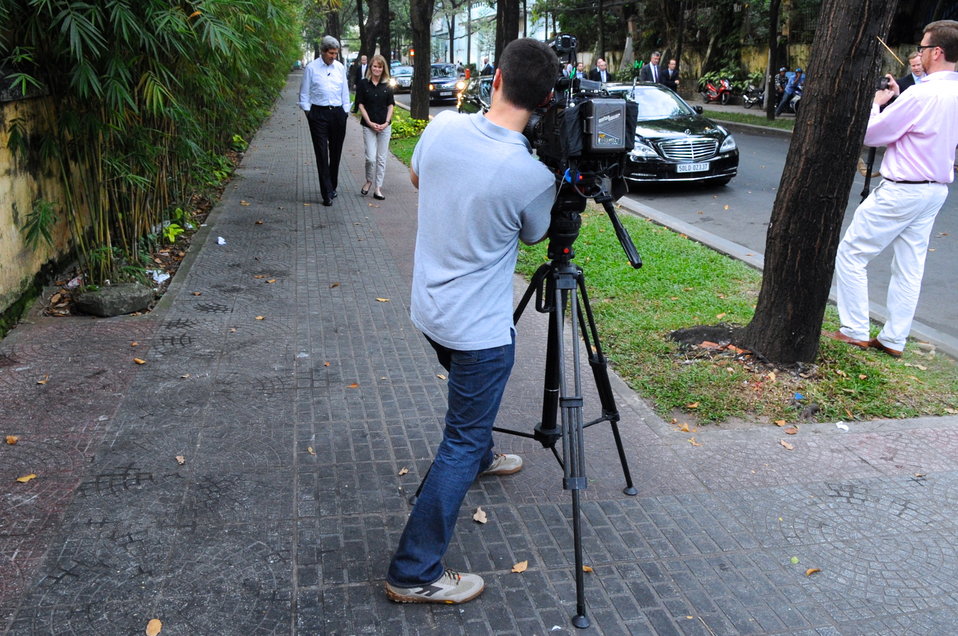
Secretary Kerry Tapes Interview With ABC's Martha Raddatz

U.S. Secretary of State John Kerry walks down a street in Ho Chi Minh City with Martha Raddatz on December 14, 2013, as he tapes an interview with ABC News about his visit to Vietnam.